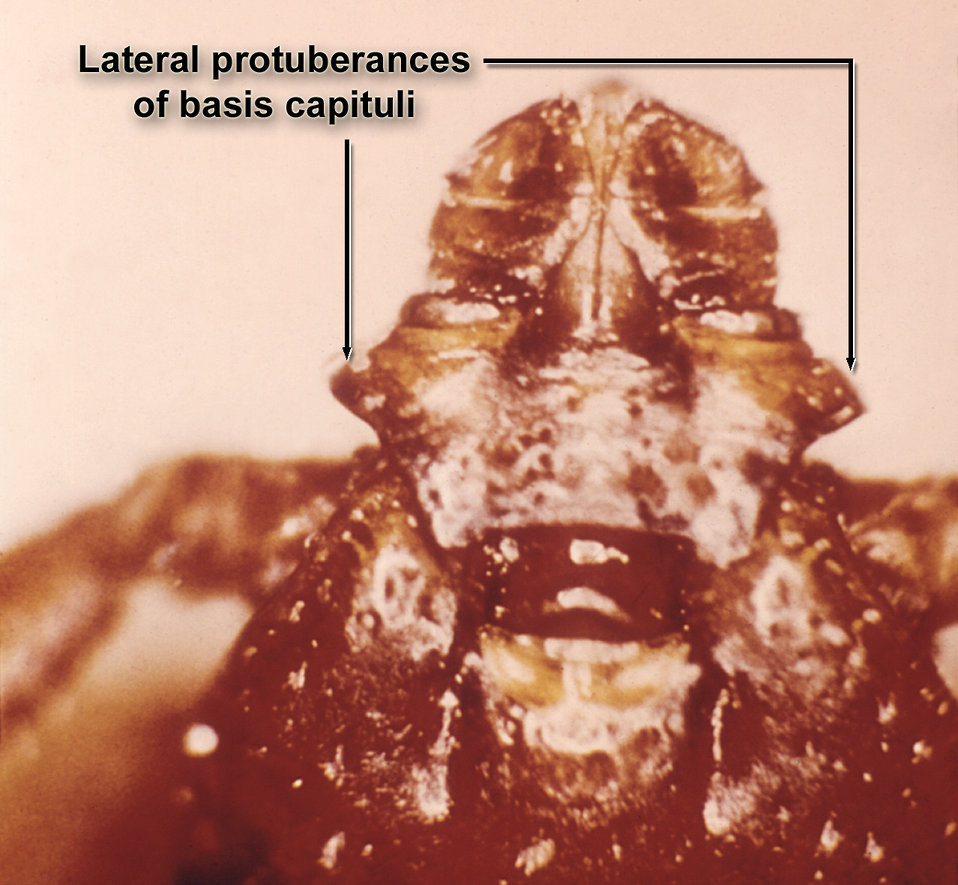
The basis capituli of this hard tick possess lateral borders that protrude bilaterally.